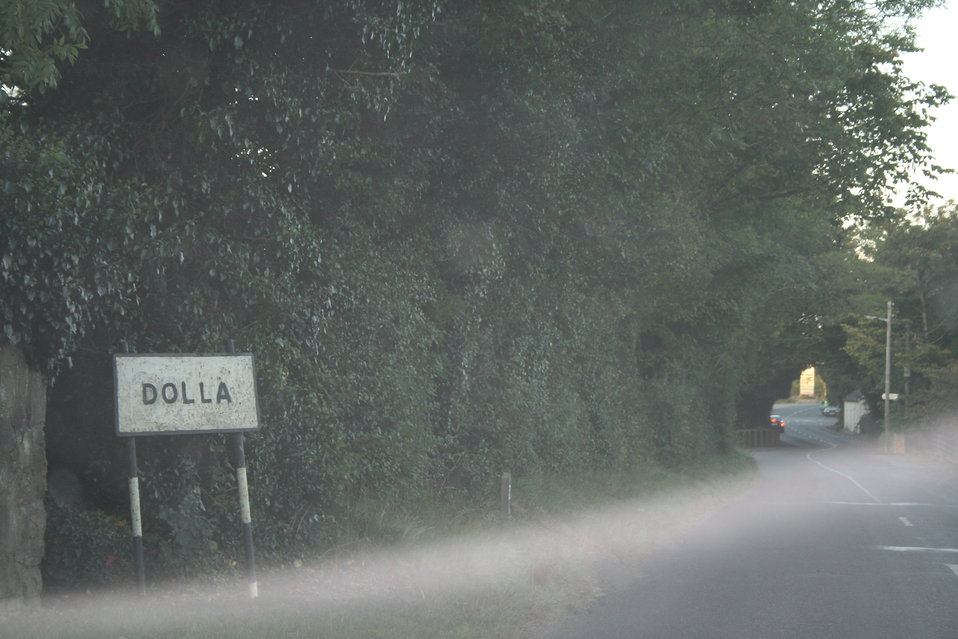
Dolla, County Tipperary, Ireland.(Sarah777 22:44, 10 October 2007 (UTC))